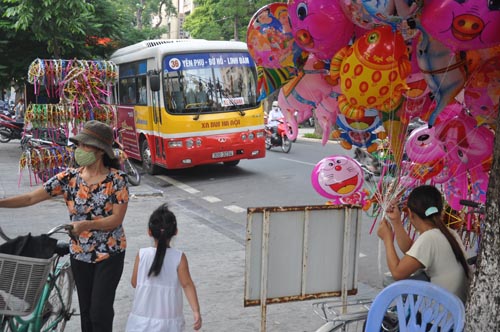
Hanoi dresses up for Mid-Autumn children's festival.